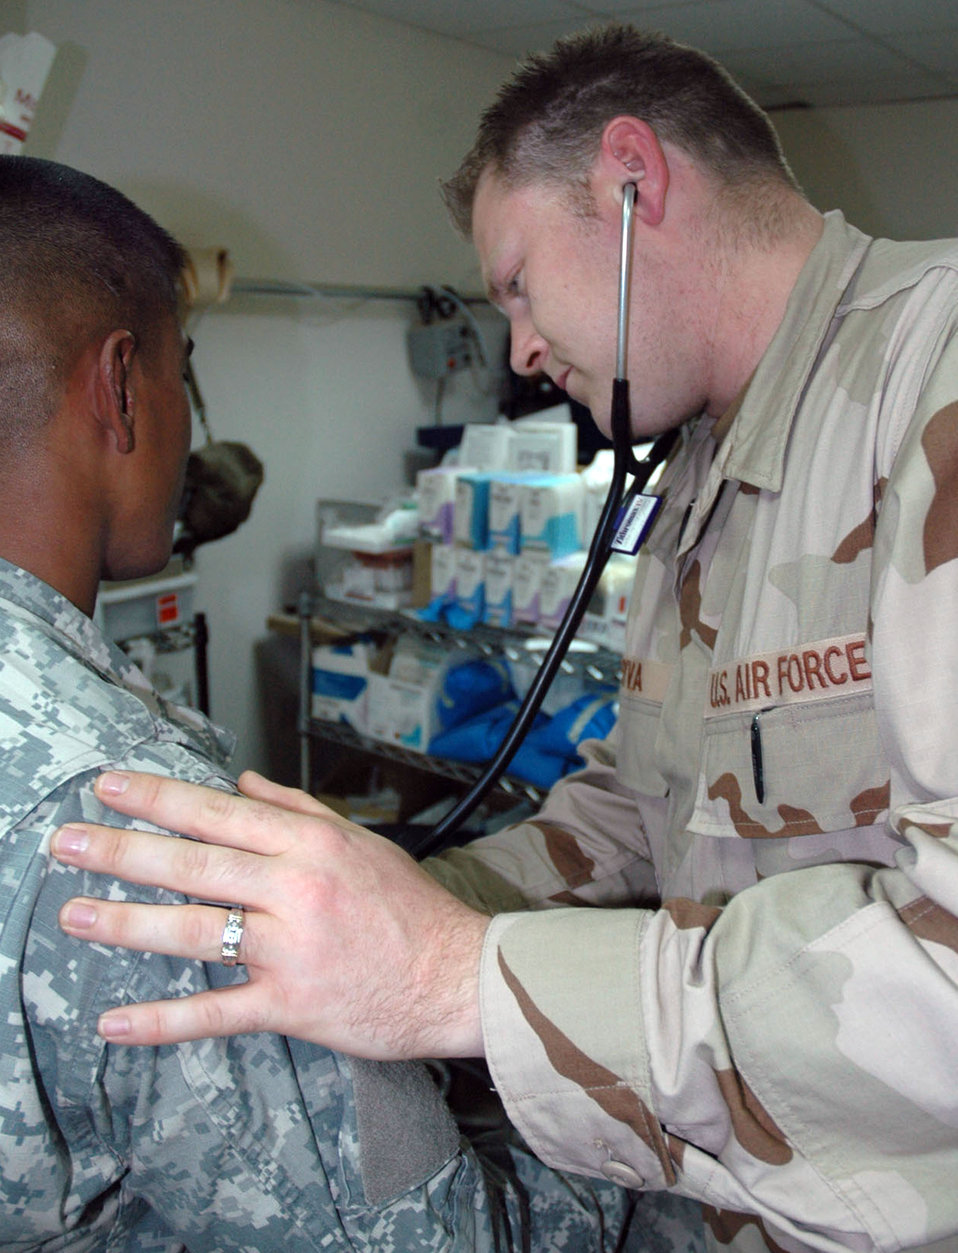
Independent duty tech's role a versatile one

Staff Sgt. Jake Leyva performs a follow-up exam on a Soldier injured by shrapnel. Sergeant Leyva is an independent duty medical technician assigned to the 506th Expeditionary Medical Squadron at Kirkuk Air Base, Iraq.